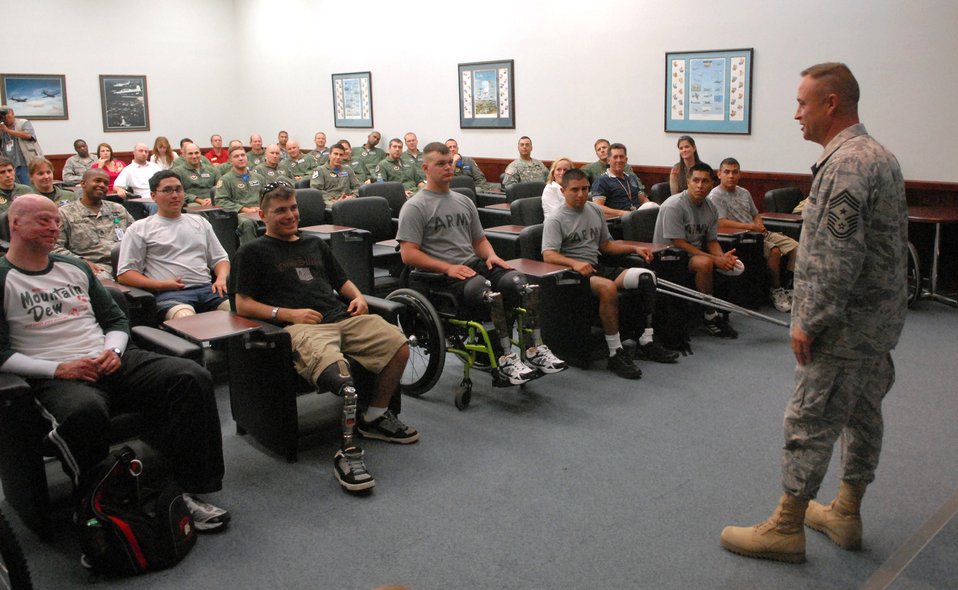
Wounded warriors tour Randolph

Chief Master Sgt. Stephen Page talks with wounded Airmen, Soldiers and Marines June 27 at the 559th Flying Training Squadron briefing room at Randolph Air Force Base, Texas. Teamed with base leaders, the wounded warriors, who are currently receiving care at the Center for the Intrepid at Brooke Army Medical Center in San Antonio, received a tour of Randolph AFB to learn about the 12th Flying Training Wing mission. Chief Page is the 12th Flying Training Wing command chief.